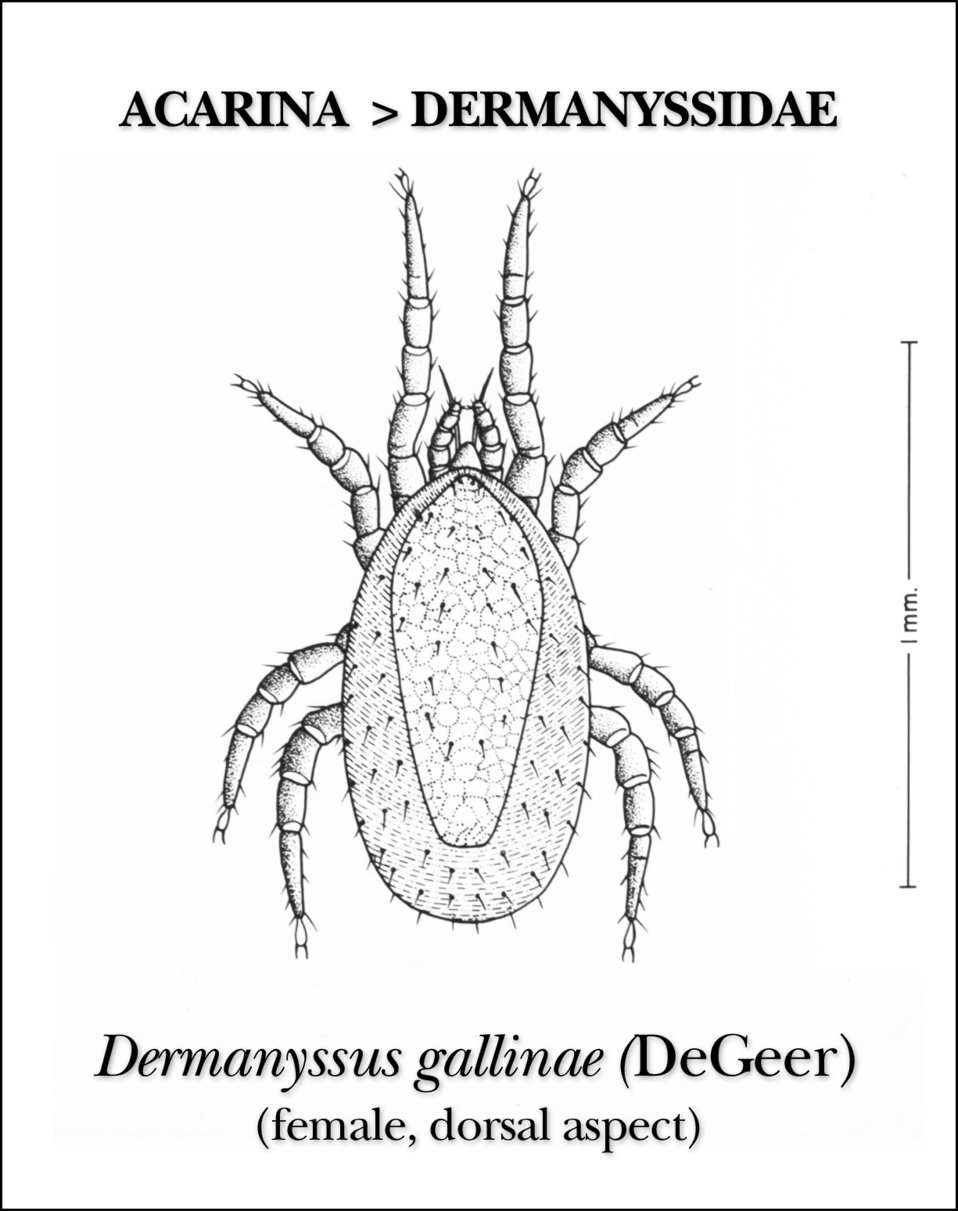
This illustration reveals the morphologic characteristics on the dorsal surface of the female mite Dermanyssus gallinae.